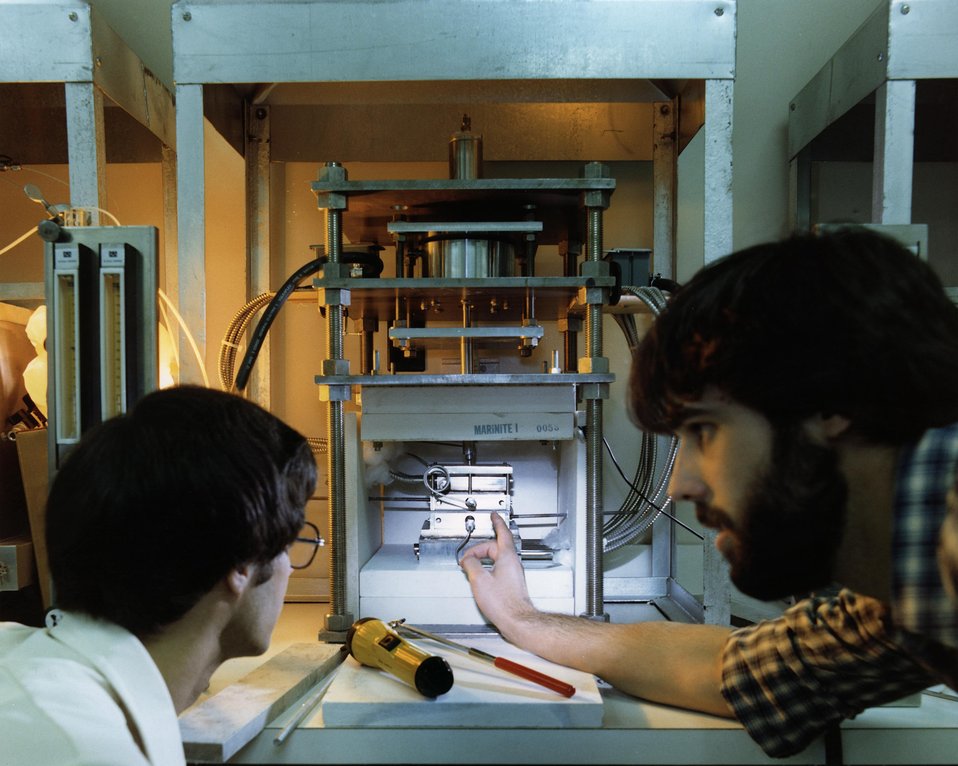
INTERIOR OF A MOLTEN CARBONATE FUEL CELL SHOWING HOT ZONE.

A NEWER METHOD OF COMMERCIALLY GENERATING ELECTRICITY IS BEING DEVELOPED BY GENERAL ELECTRIC. FUEL CELLS, BATTERY-LIKE GENERATORS, PRODUCE ELECTRICITY BY AN ELECTROCHEMICAL RE- ACTION. UNLIKE THE BATTERY, THE FUEL CELL HAS A CONSTANT SOURCE OF FUEL. IN THIS PROGRAM, G.E. IS PLANNING TO USE GASIFIED COAL TO POWER THE CELLS. THIS HYDROGEN-RICH FUEL IS FED INTO ONE SIDE OF THE CELL WHILE OXYGEN IS FED INTO THE OTHER. THIS CREATES A NEGATIVE CHARGE AT THE HYDROGEN (ANODE) SIDE AND A POSITIVE CHARGE AT THE OXYGEN (CATHODE) SIDE. THE ATTRACTION OF THESE CHARGES CAUSES THE ELECTRONS TO FLOW THROUGH THE MOLTEN CARBONATE ELECTROLYTE. THIS MOVEMENT OF THE ELECTRONS CREATES THE ELECTRICITY. BECAUSE THE MOLTEN CARBONATE FUEL CELL HAS A HIGH OPERATING TEMPERATURE, IT CREATES EXCESS HEAT WHICH CAN BE USED TO POWER OTHER ELECTRIC GENERATORS.